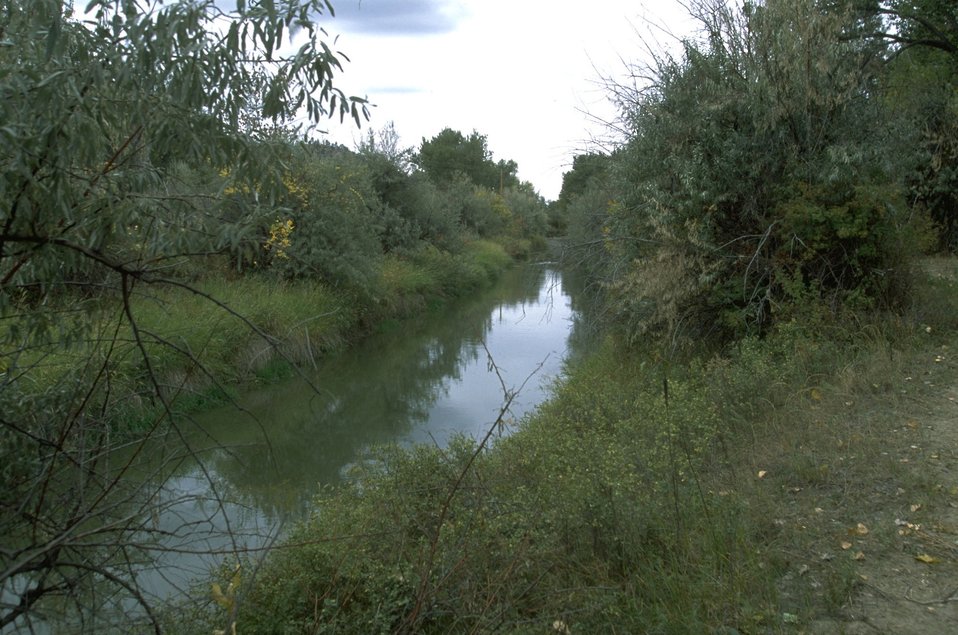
A channel of the Yellowstone River viewed from the Howrey Island Nature Trail